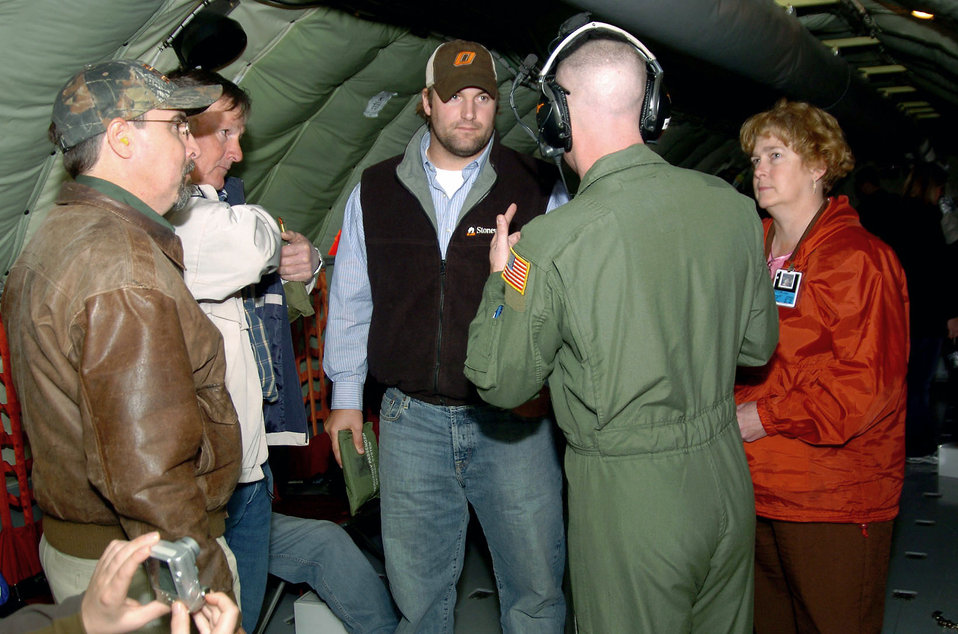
Altus community members spend time in sky

Staff Sgt. Doug Boren, a KC-135 Stratotanker boom operator, answers questions about the Air Force and the aircraft during an orientation flight for neighbors of Altus Air Force Base, Okla., Nov. 14 as part of the Farm-City community outreach program. While some of the guests experienced the air refueling mission from the tanker, others saw the refueling from the receiver, a C-17 Globemaster III.